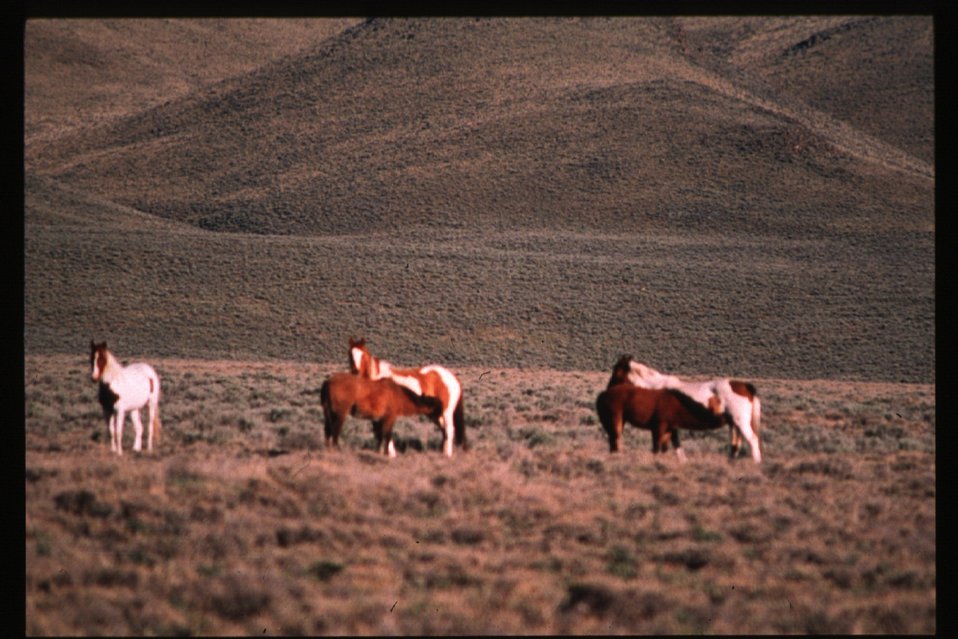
Wild horses Wild Horse and Burro Adoptions Program Owyhee Field Office Boise Corrals Lower Snake River District LSRD